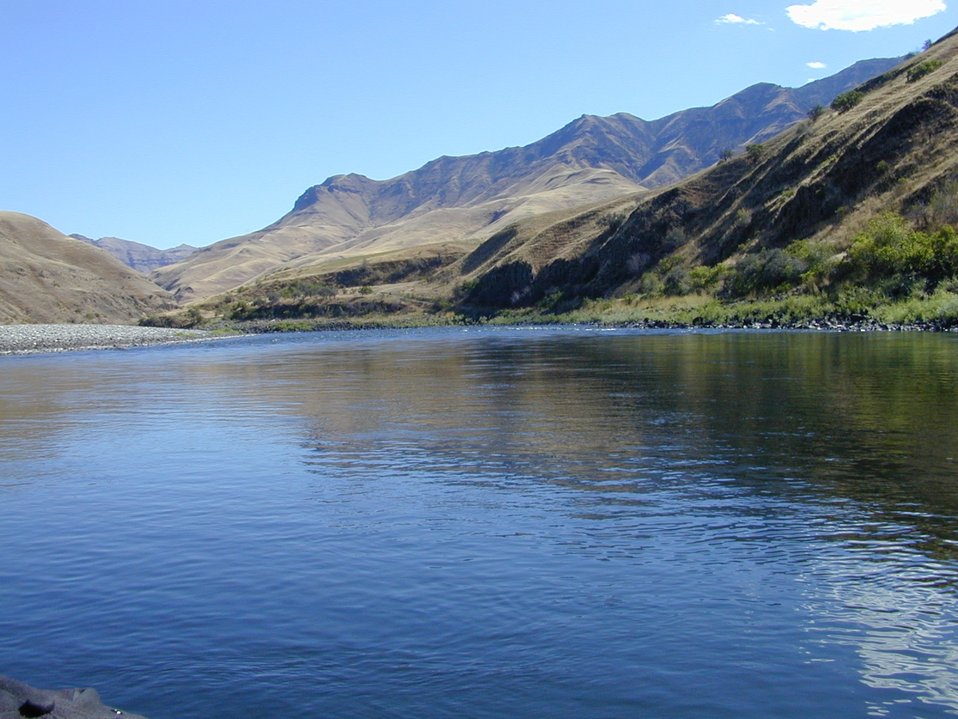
Scenic shot of Lower Salmon River Cottonwood Field Office UCSC Upper Columbia Salmon Clearwater District